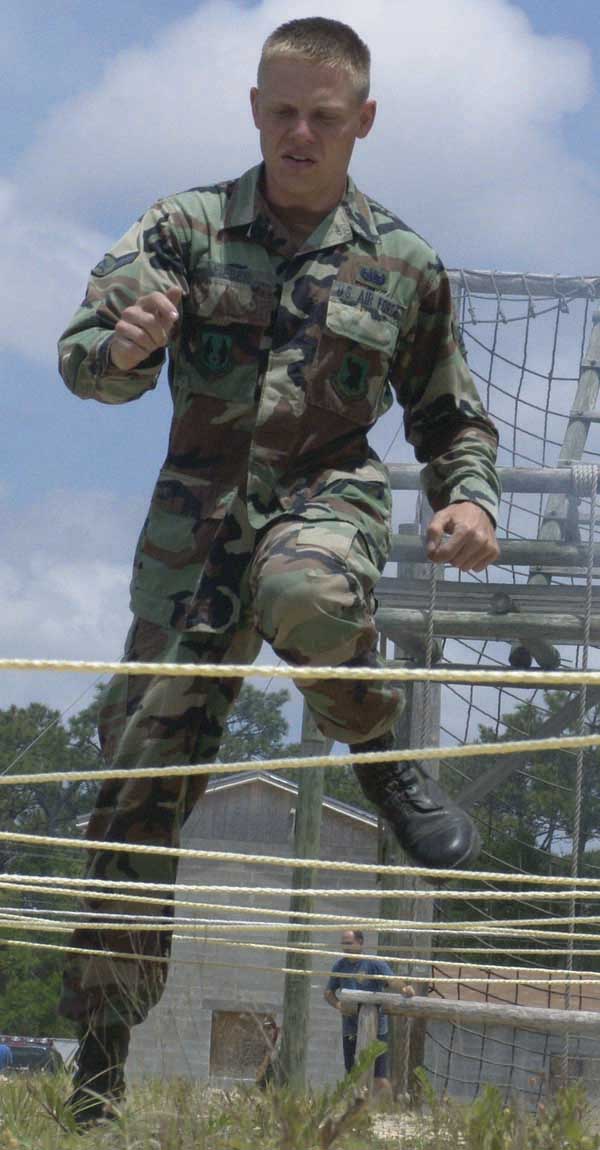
Warrior Day

EGLIN AIR FORCE BASE, Fla. -- Airman 1st Class Dane Fieber steps through the ropes at the beginning of the Warrior Day obstacle course competition. He is assigned to the 96th Civil Engineer Group.